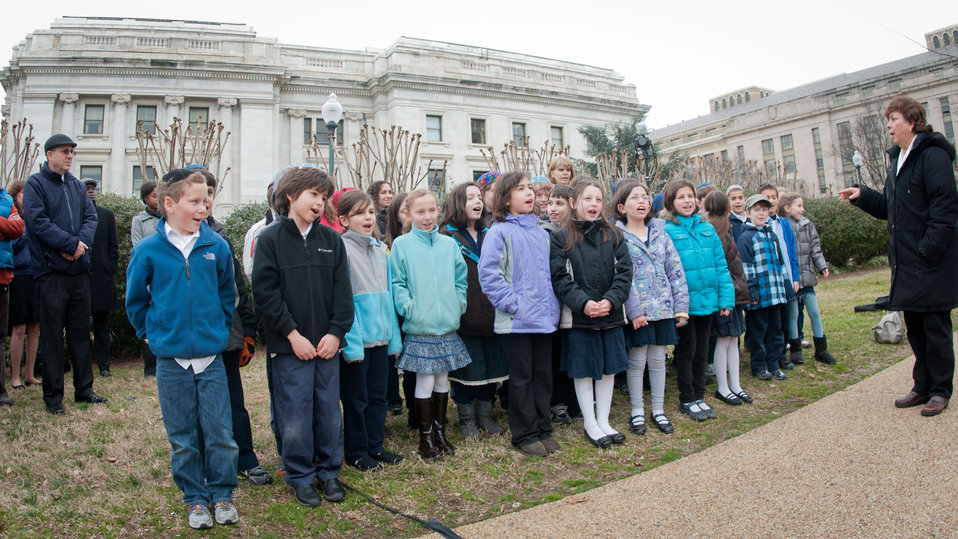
The third grade class of the Jewish Primary Day School of the Nation’s Capital is lead by their third grade Hebrew Teacher Gila Efrati (right), as they sing “Almond Trees Blossom' to the attendees, during the Celebration of Tu B’Shevat “The New Year of the Trees” event, at the District of Columbia western lawn next to the USDA Headquarters, Whitten Building at 14th Street and Independence Ave SW, Washington, D.C. on Wednesday, February 8, 2012.